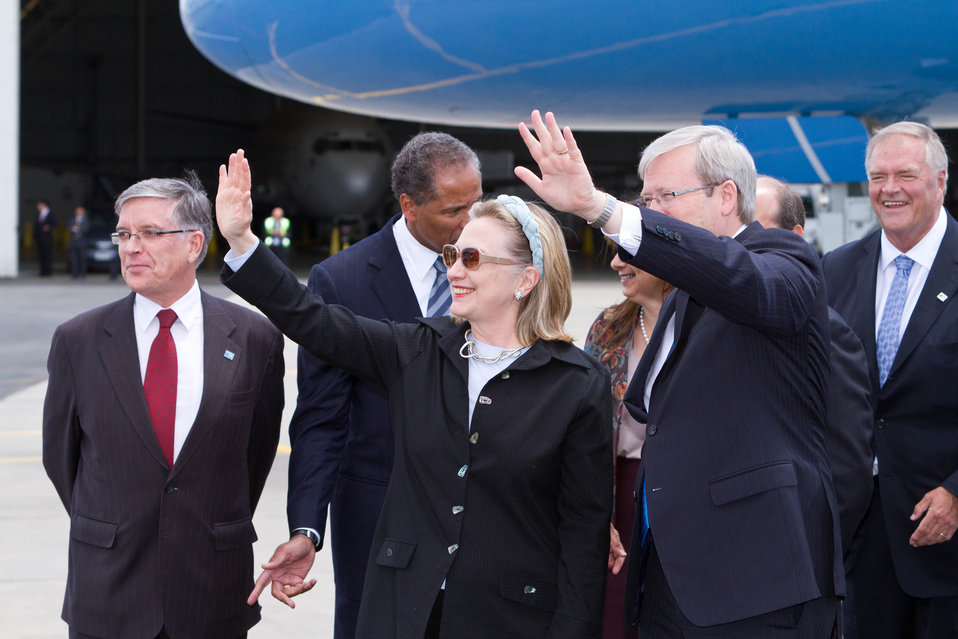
Secretary Clinton and Australian Foreign Minister Rudd Wave

U.S. Secretary of State Hillary Rodham Clinton and Australian Foreign Minister Kevin Rudd wave to the crowd in Melbourne, Australia, on November 7, 2010.